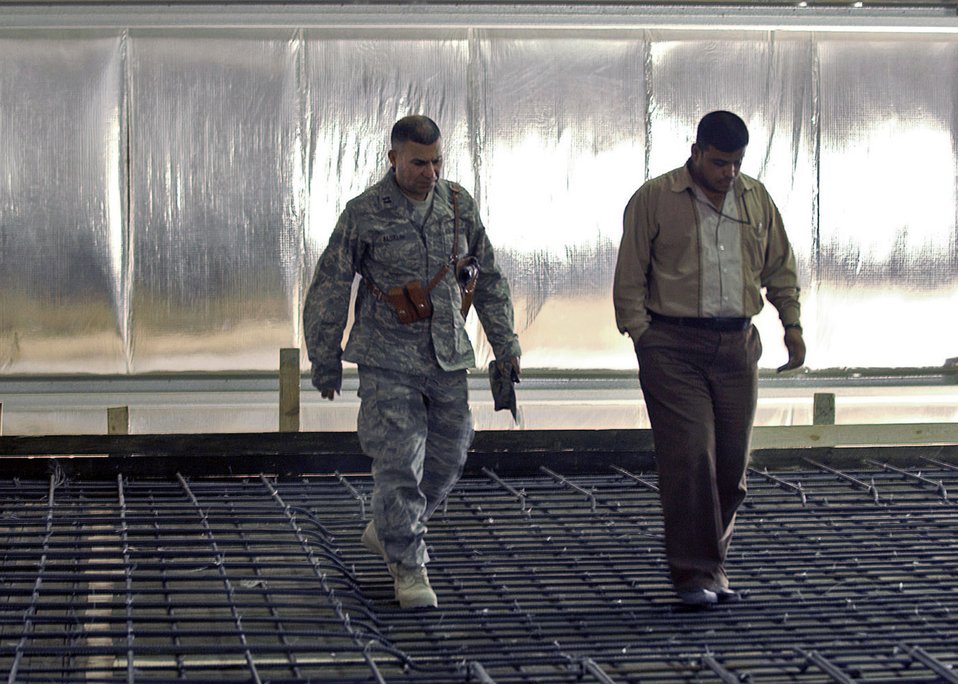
Former Iraqi citizen returns to serve as Air Force officer

Capt. Rasul Alsalih, a project officer for the 732nd Expeditionary Civil Engineer Squadron, discusses a construction project with an Iraqi national. An Iraqi by birth, Captain Alsalih fought against Saddam Hussein shortly after Desert Storm and found refuge in an Army camp in Saudi Arabia. He was educated in the U.S. before seeking a commission in the Air Force. He was one of four servicemembers recognized as an